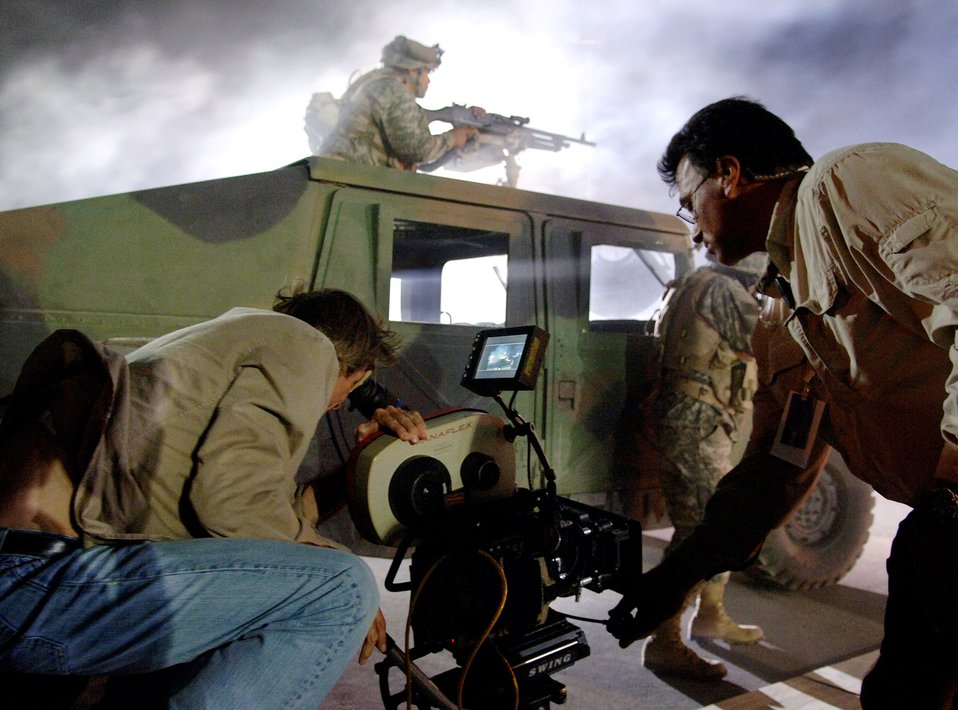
Movie makers team with military for realistic scenes

Movie director Michael Bay films an Airman on the set of the movie